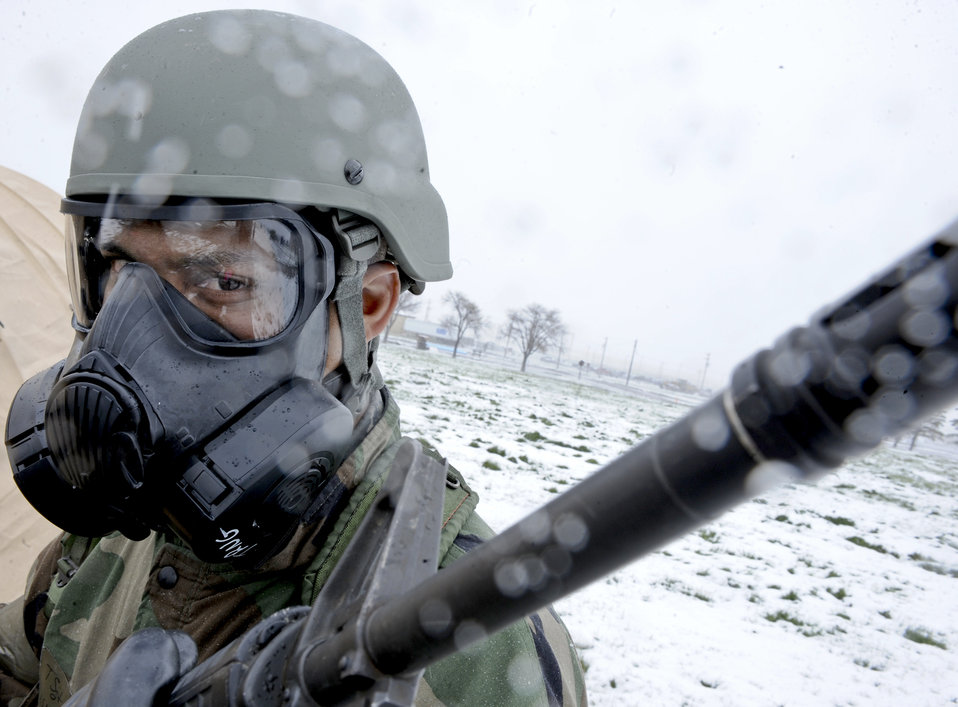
Bad weather, no problem

Tech. Sgt. Correy Hodge stands guard at an entry control point during an operational readiness exercise, May 12, 2010, at Ellsworth Air Force Base, S.D. The exercise tests Airmen across the base on their ability to operate in a deployed environment. He is a 28th Medical Group noncommissioned officer in-charge of medical material.